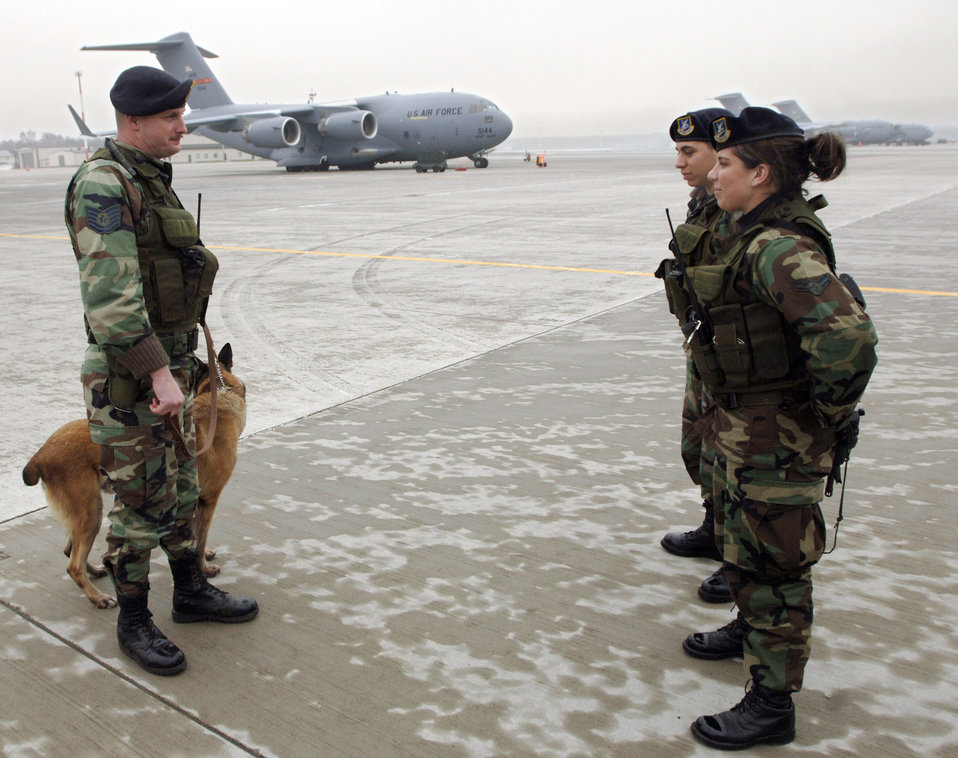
Four-legged partner

RAMSTEIN AIR BASE, Germany (AFPN) -- Basco waits as Tech. Sgt. John Vanderdrink receives a report. Sergeant Vanderdrink has worked with Basco, a Belgian Malinois, for three years. They are assigned to the 435th Security Forces Squadron. Sergeant Vanderdrink, originally from Wilmington, N.C., has been a dog handler for seven years.